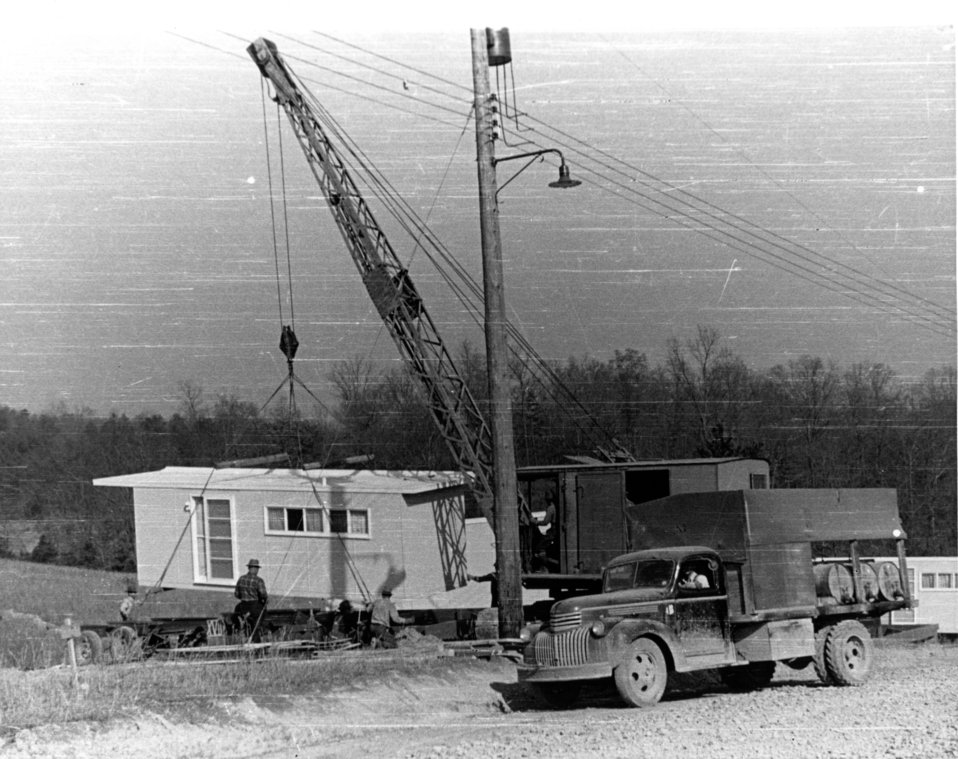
Housing at Oak Ridge